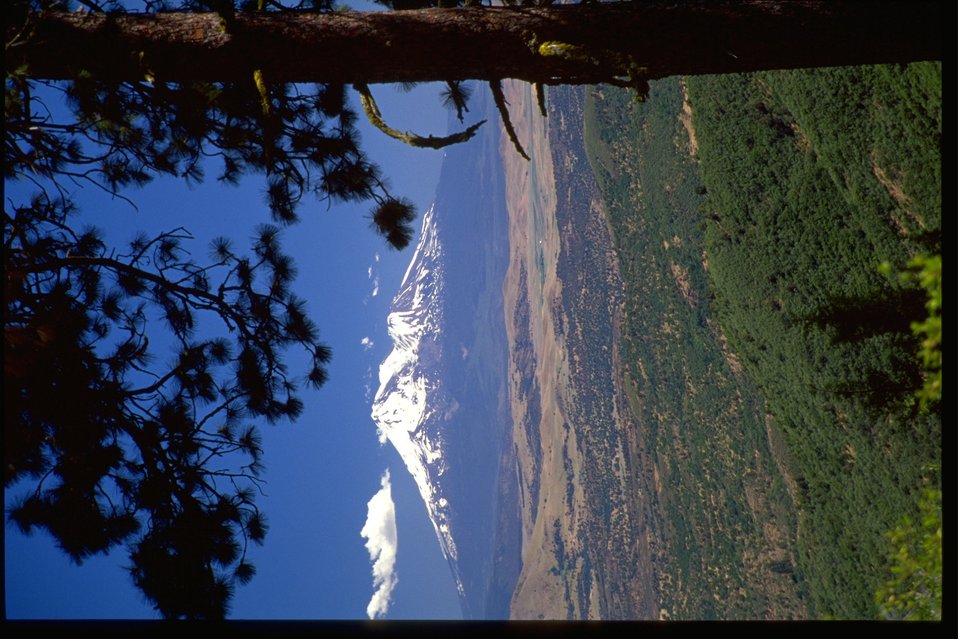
Mount Shasta from Boccard Point, Soda Mountain.